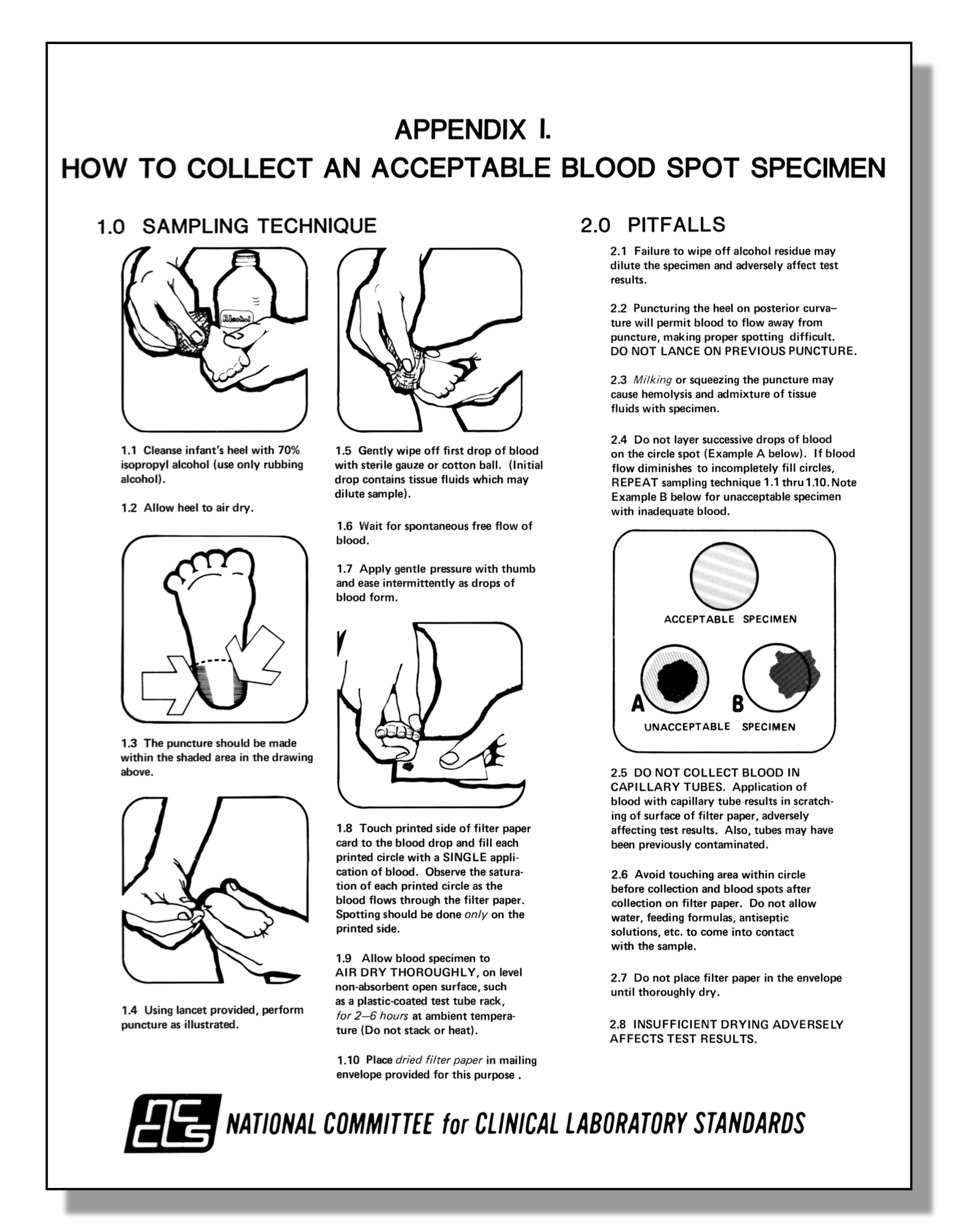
Earlier educational material demonstrating the technique for collecting an acceptable blood spot specimen from an infant's heel.